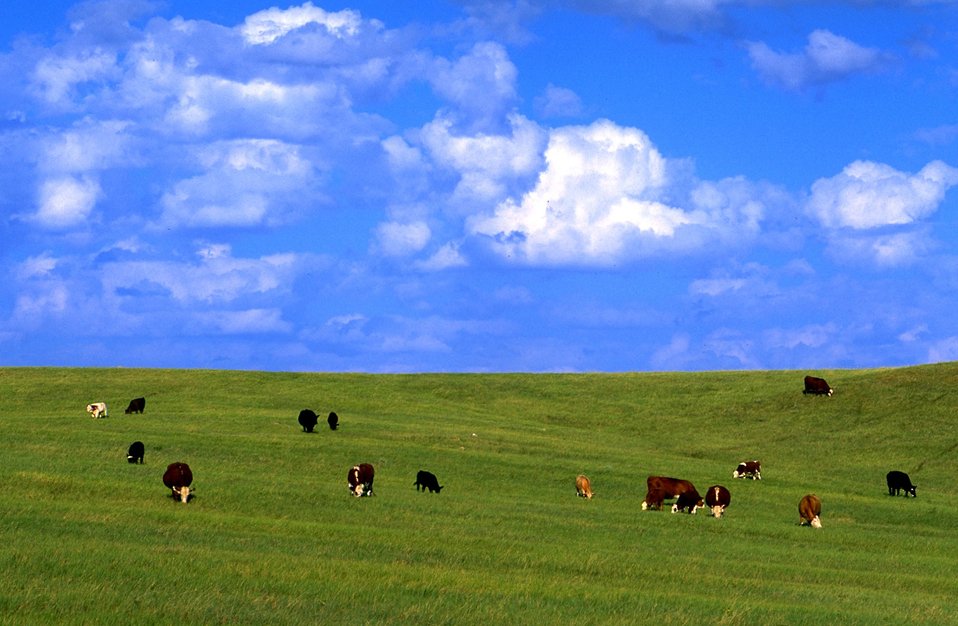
Cattle grazing 45 miles north of Belle Fourche